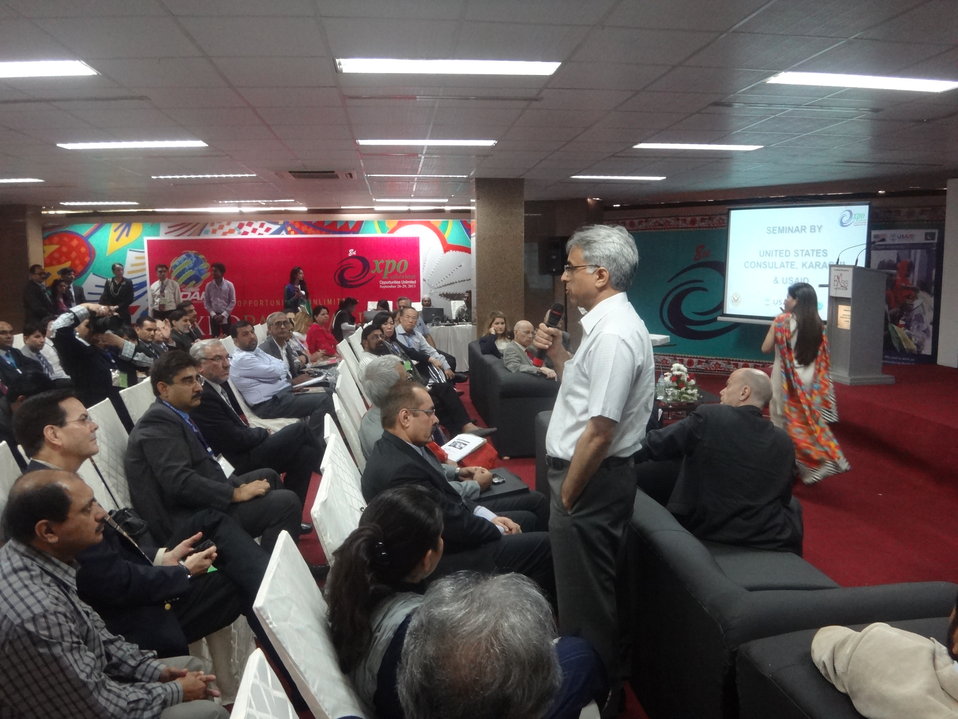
The Agribusiness Project, Presentation at Conference, TDAP Expo, Karachi, September 27, 2013 (12)